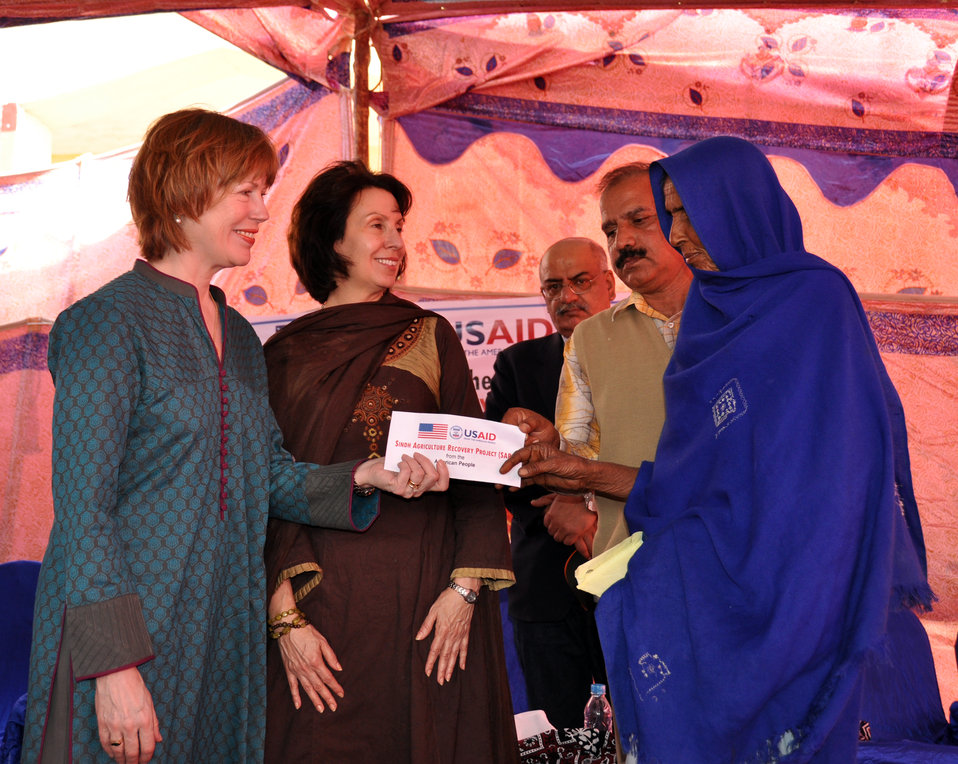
USAID Sindh Agricultural Recovery Program

Thatta, February 6, 2011 - Dr. Marilyn Wyatt (left), wife of the U.S. Ambassador to Pakistan, and Julie Koenen (center), USAID Officer-in-Charge for Karachi, present a small cash grant to female farmer, participant of USAID’s Sindh Agricultural Recovery Program. This $15 million program is helping Sindh farmers plant crops in flood-affected areas. The program is implemented by Rural Support Programs Network, Sindh Rural Support Organization, the Sindh Abadgar Board, and other local organizations such as National Rural Support Program.